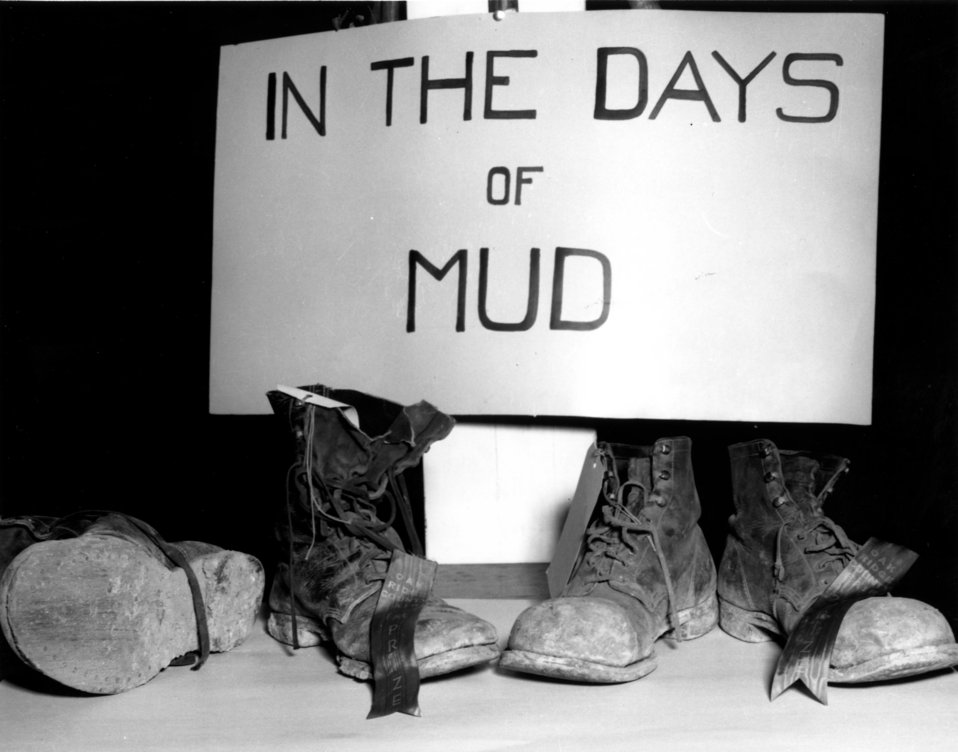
Daily Life at Oak Ridge